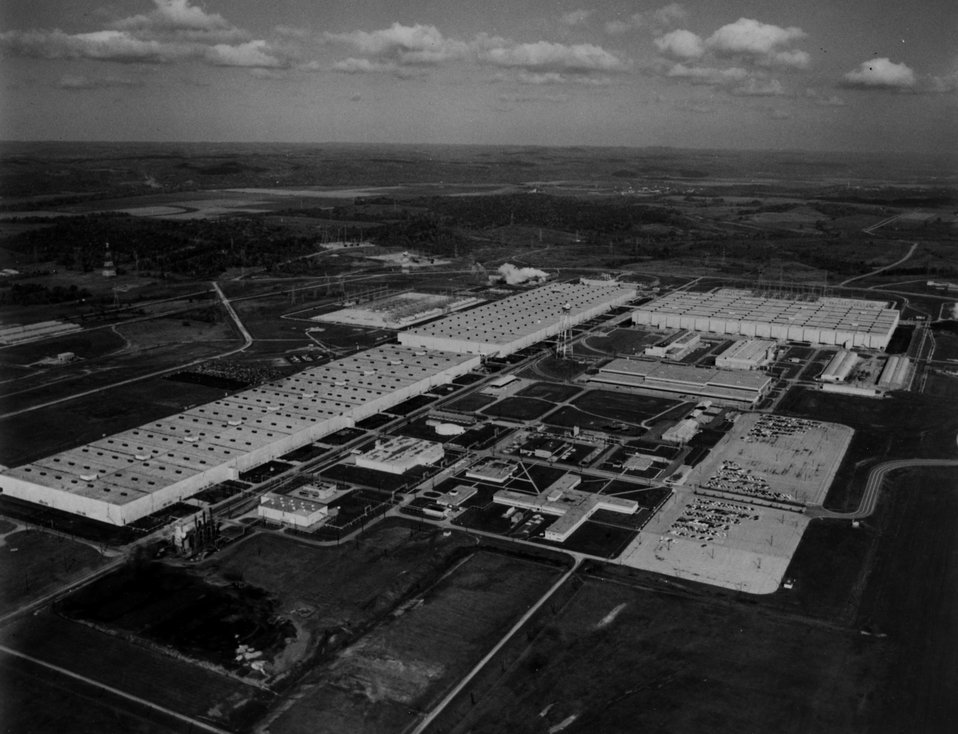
Gaseous Diffusion Plant. c. 1970